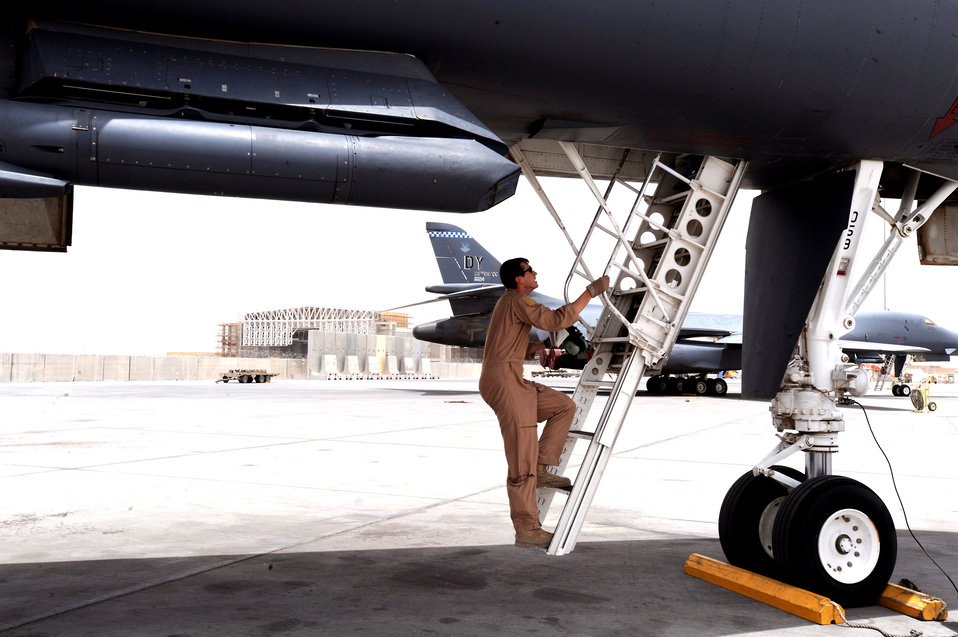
B-1B makes impact throughout Southwest Asia

Maj. Sid Stegall climbs the ladder of a B-1B Lancer to conduct preflight checks from the cockpit prior to a mission May 5 at an air base in Southwest Asia. Major Stegall is a 9th Expeditionary Bomb Squadron instructor pilot. He is a native of Pine Log, Ga., and deployed from Dyess Air Force Base, Texas.